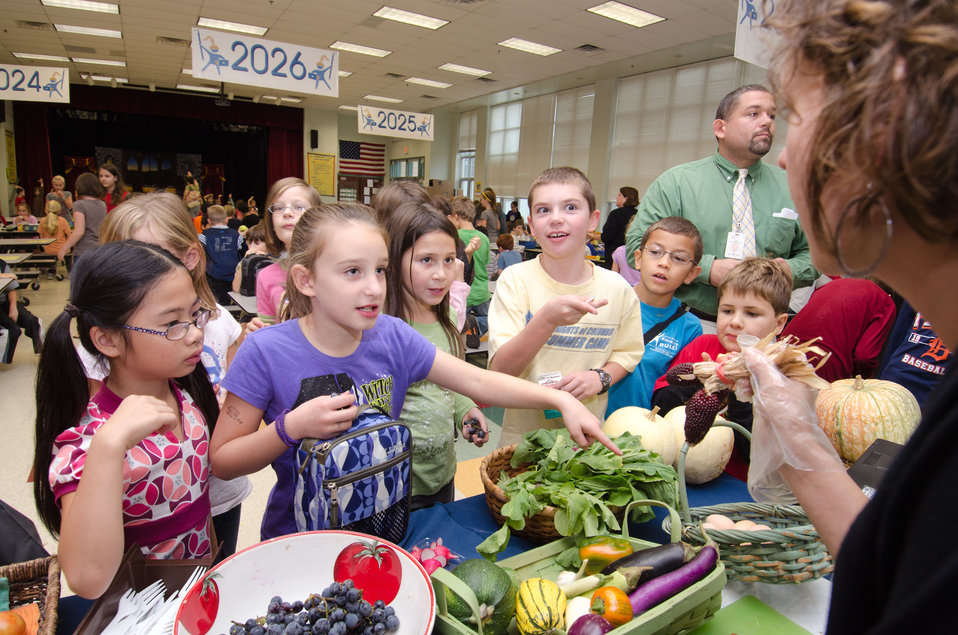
Maple Avenue Market Farm co-owner Sara Guerre invited students to learn about their local farmers, during a National School Lunch Week event at Nottingham Elementary School in Arlington, VA, on Wednesday, October 12, 2011. Farmers from Bigg Riggs Farm in Hampshire County, WV, and Maple Avenue Market Farm in Vienna, VA were very popular with the students. Today's menu included roasted chicken, roasted butternut squash with dried cranberries, farm fresh mixed lettuce salad, turkey wraps, pita wedges, hot muffins, carrots, Asian pears and more.